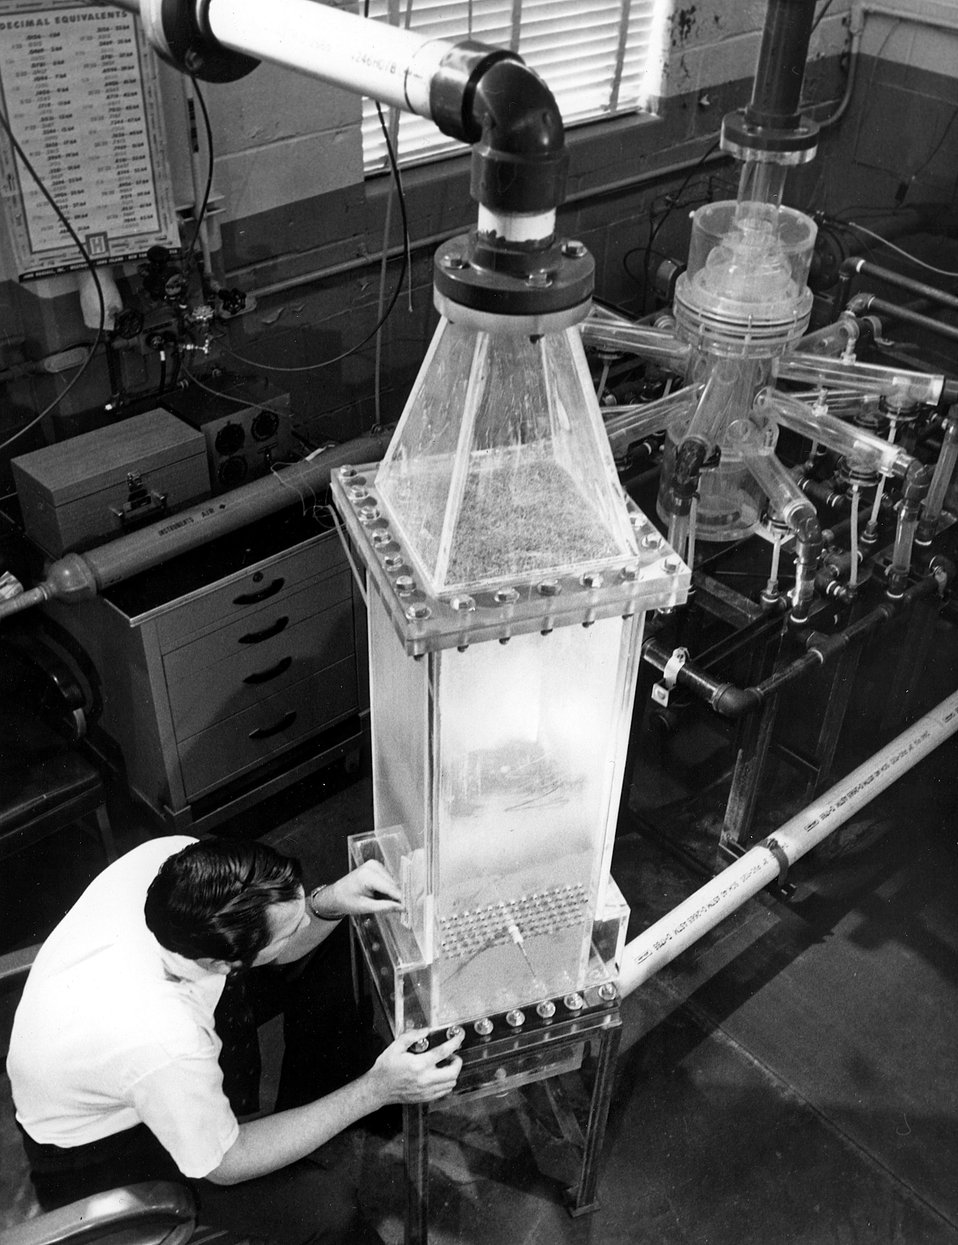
A system for the clean combustion of high sulfur coal for producing electric power is being developed at the Energy Research and Development Administration's Oak Ridge National Laboratory. Circa 1976.